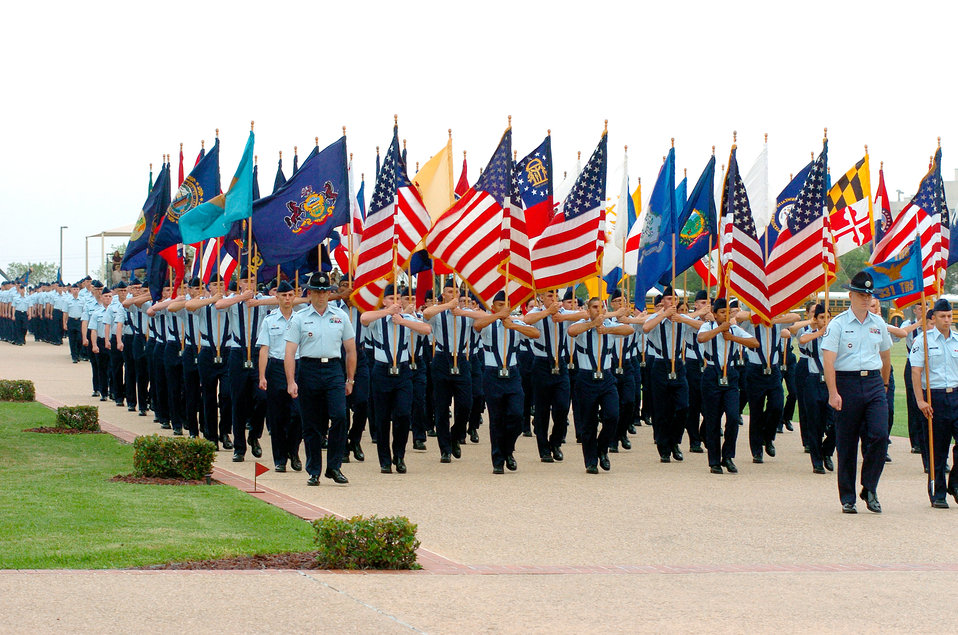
Graduation day

LACKLAND AIR FORCE BASE, Texas -- Airmen carry state flags during Basic Military Training graduation here Oct. 22. The ceremonies were attended by Secretary of the Air Force Dr. James G. Roche and Air Force Chief of Staff Gen. John P. Jumper.